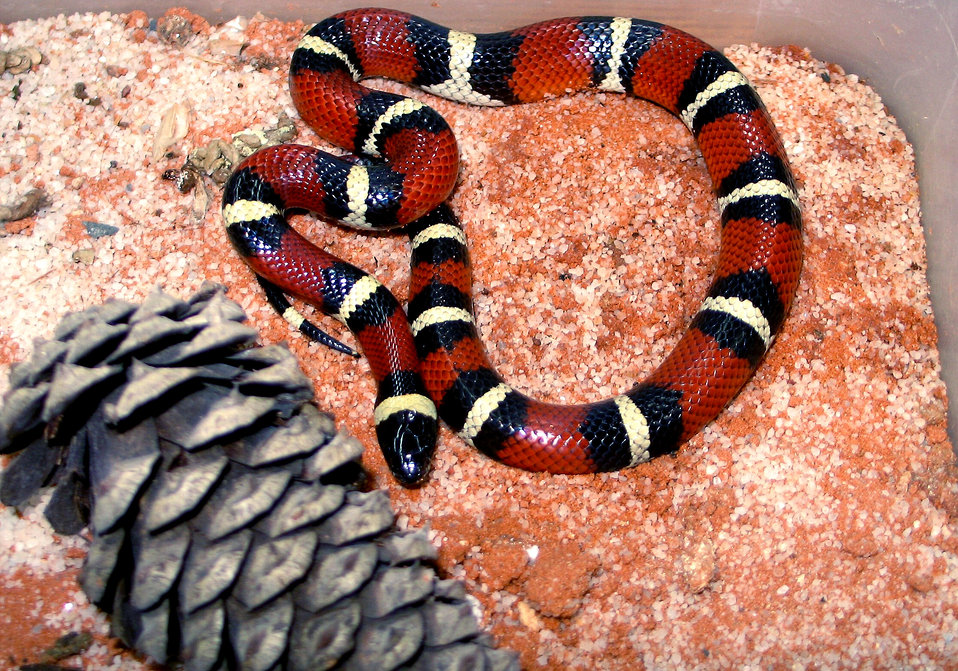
This was a 2005 photograph taken of a harmless 'milk' snake, Lampropeltis triangulum annulata, which is very similar in coloration to its more deadly venomous counterpart, the 'Texas coral' snake, Micrurus tener, (see PHIL# 8141). The similarity in coloration to the Texas coral snake, and the fact that the habitats of these snakes includes hurricane-prone regions of the United States, makes the ability to accurately distinguish these two reptiles from one another extremely important for those living in, or first-responders to these areas after a weather-related disaster.